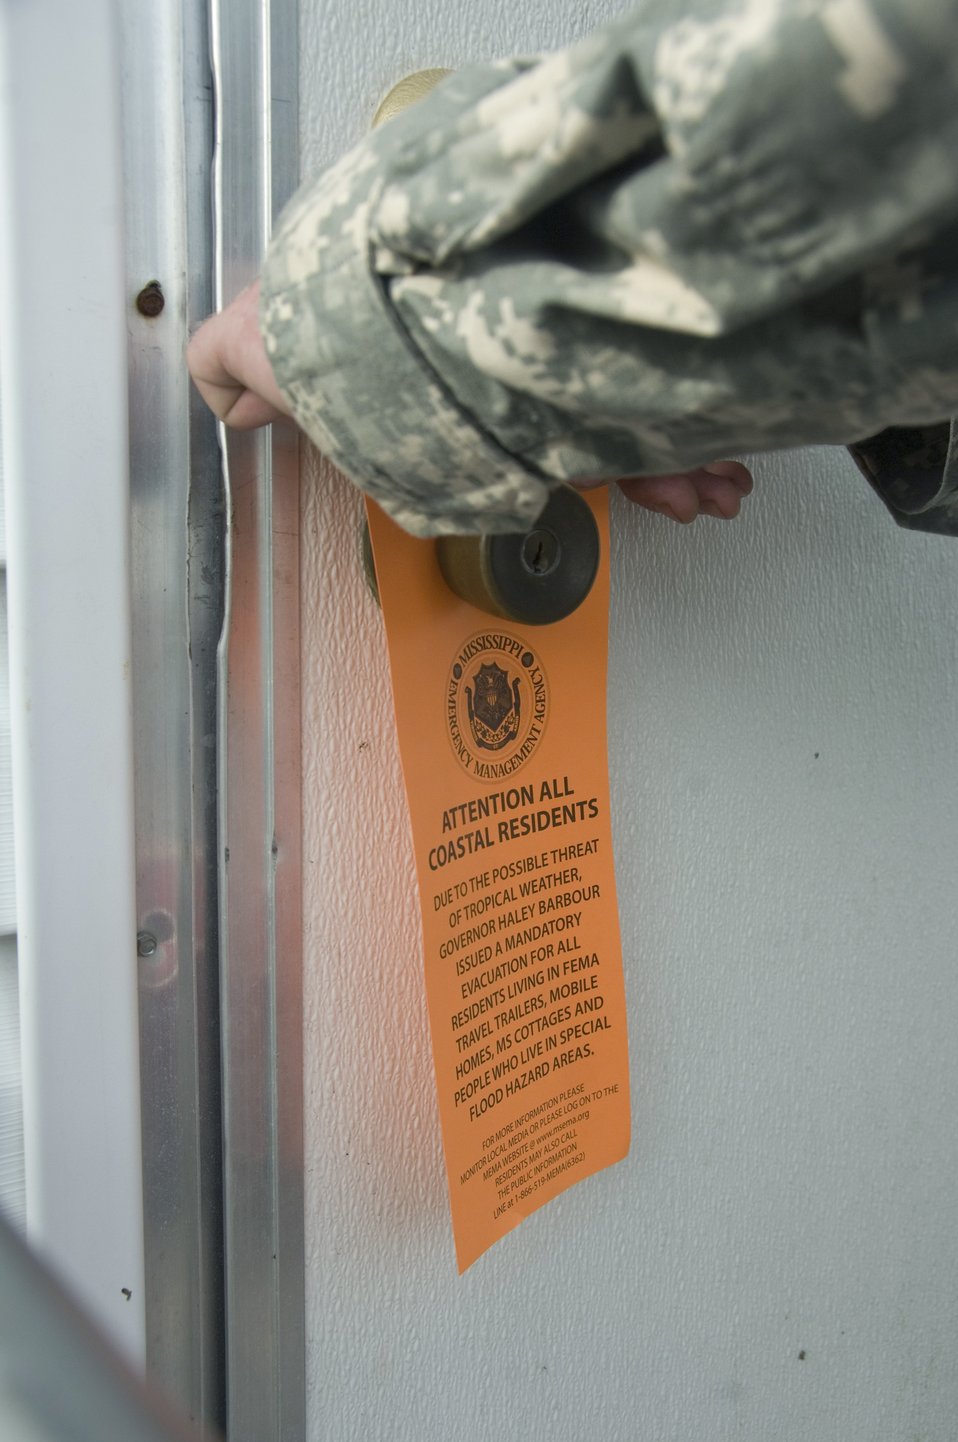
Army Guardsmen begin evacuation mission

Army National Guard soldiers go door to door in Gulfport, Miss., Aug. 31, notifying residents in FEMA trailers of mandatory evacuations ordered in anticipation of Hurricane Gustav reaching landfall.